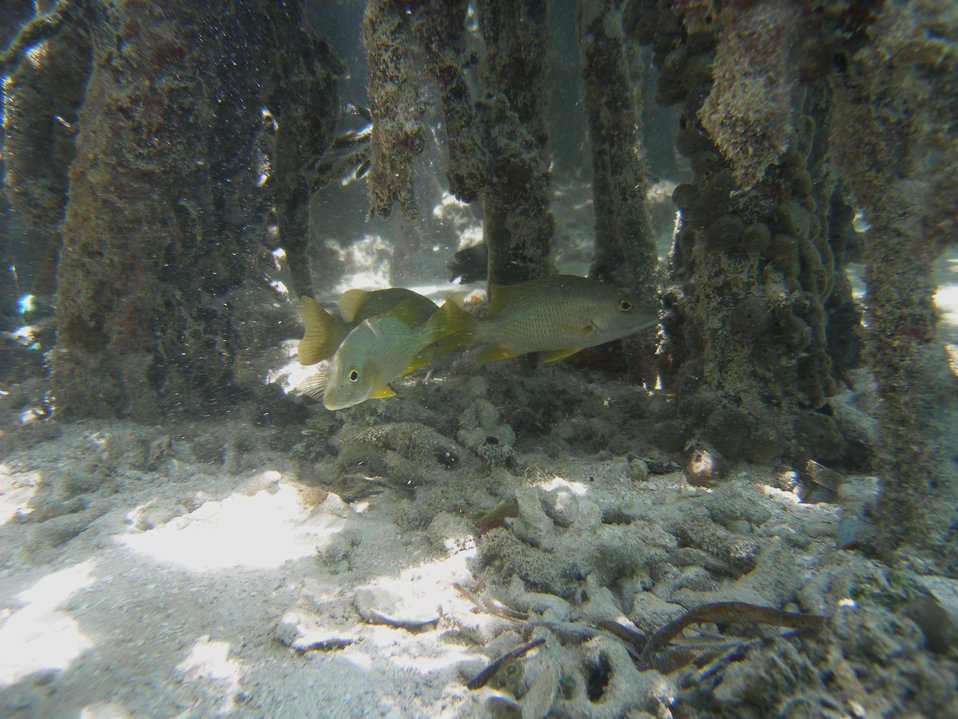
Schoolmaster (Lutjanus apodus)